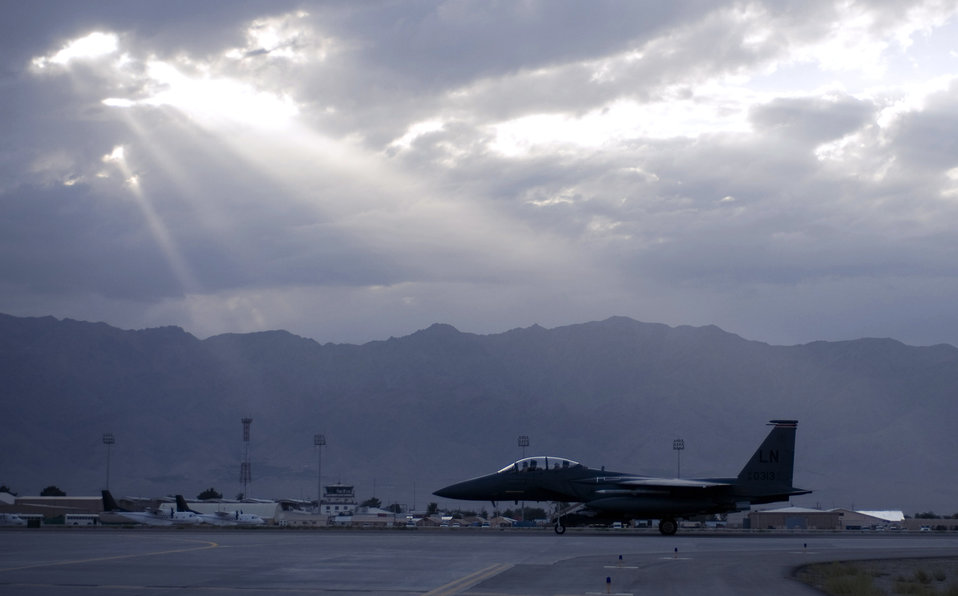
Pilots provide emergency close air support

A F-15E Strike Eagle prepares to take-off July 26 at Bagram Airfield, Afghanistan. Along with the A-10 Thunderbolt, the F-15 provides close air support to ground troops throughout Afghanistan area of operations.